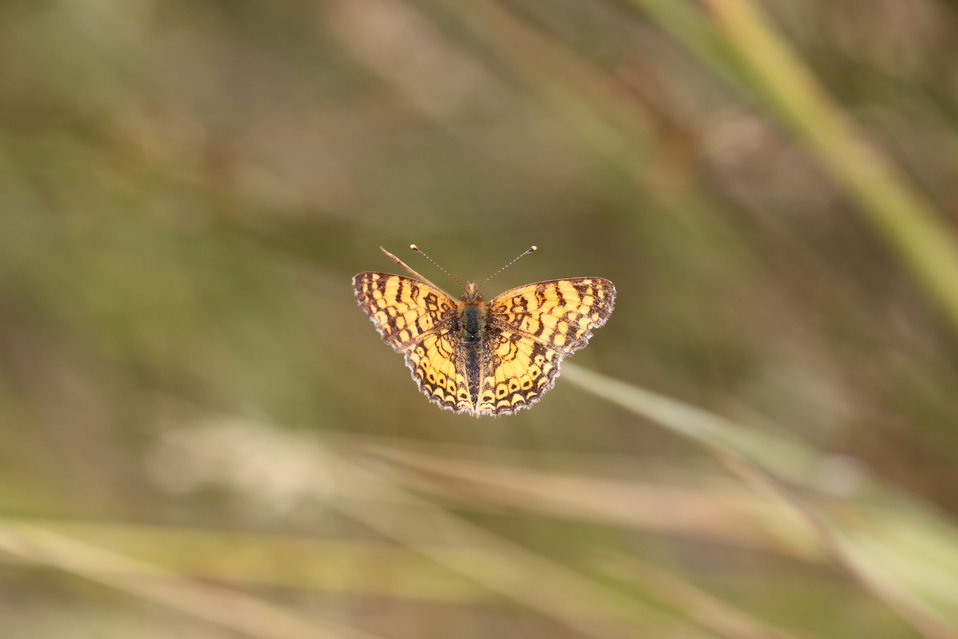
Mylitta Crescent

Phyciodes mylitta perched at perimeter of Refuge wetland; this species likes wet habitats.